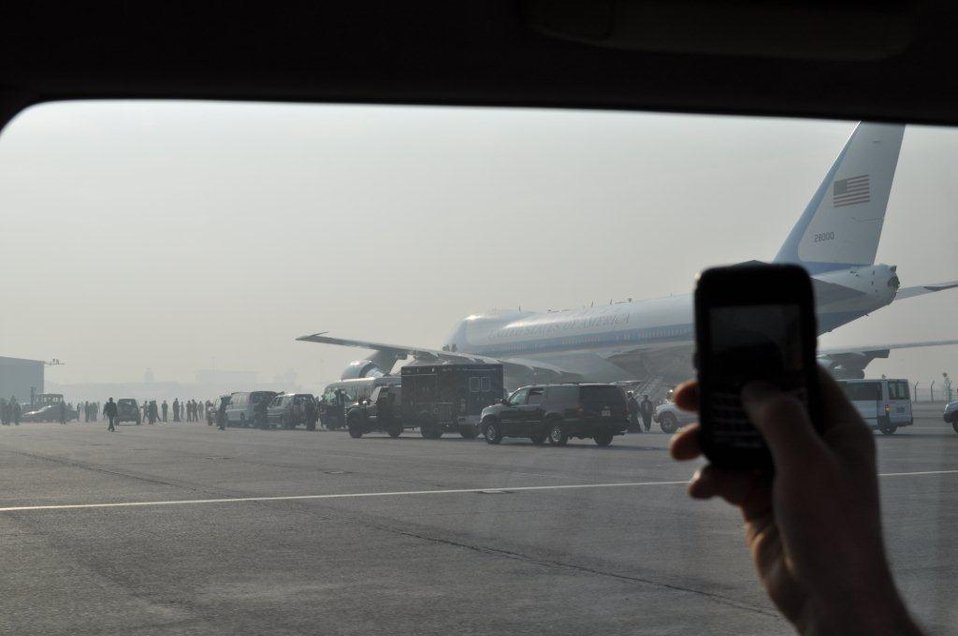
Geithner visit to Asia, November 4-12, 2010

Air Force 1 prepares to depart Delhi, India